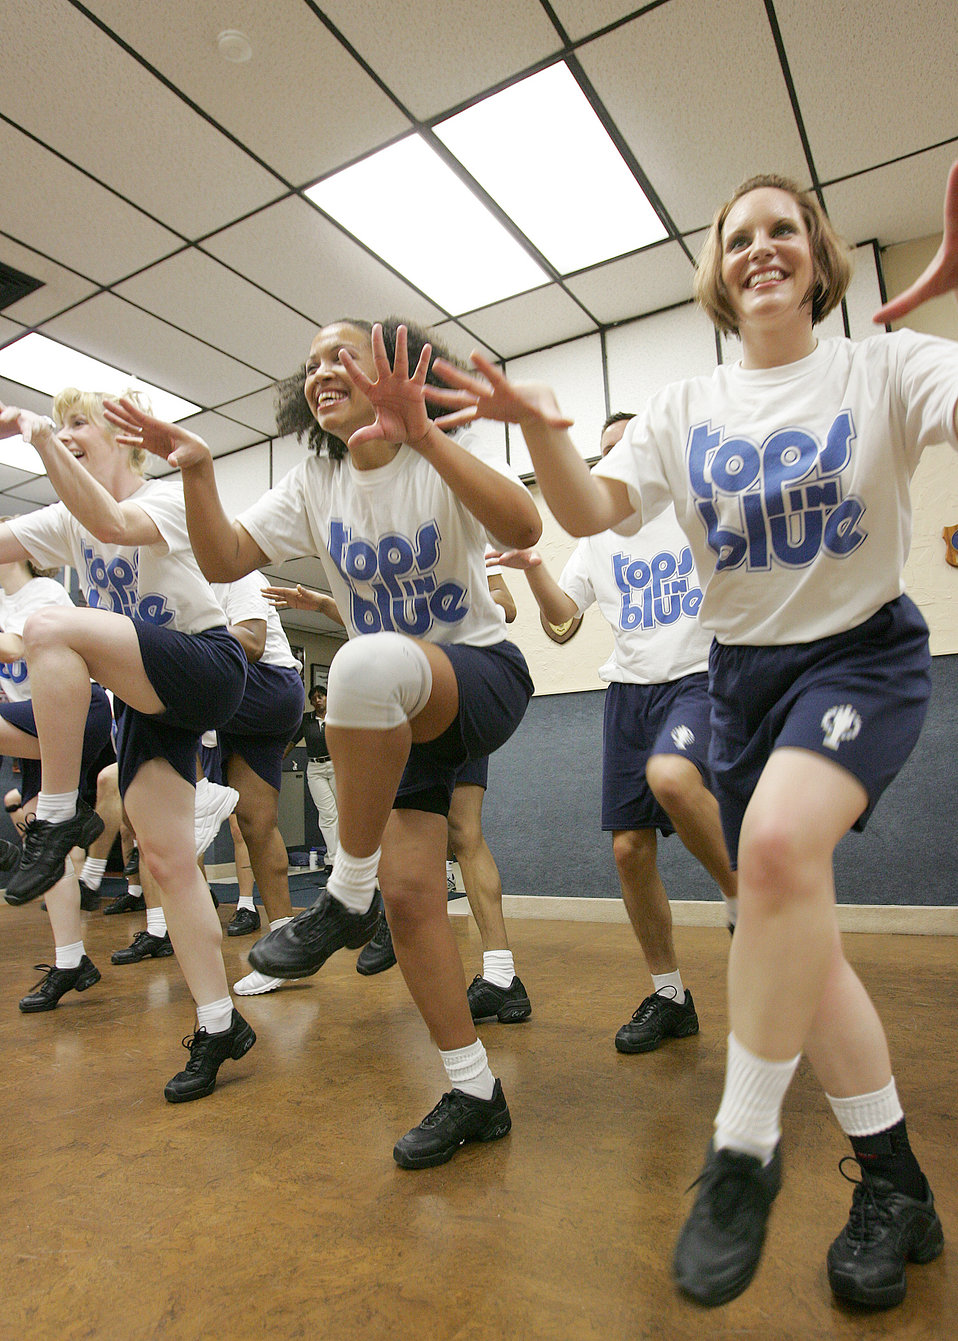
Tops In Blue 2007 rehearses for anniversary season

Tops in Blue 2007 cast members rehearse in their production center Feb. 7 at Lackland Air Force Base, Texas. This year's theme is